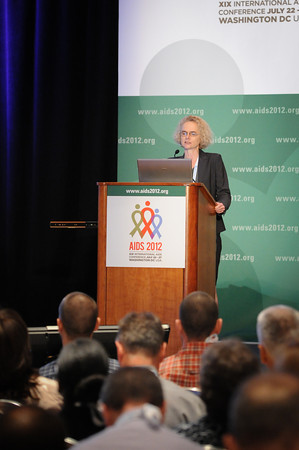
Dr. Volkow Speaks at XIX International AIDS Conference - 2